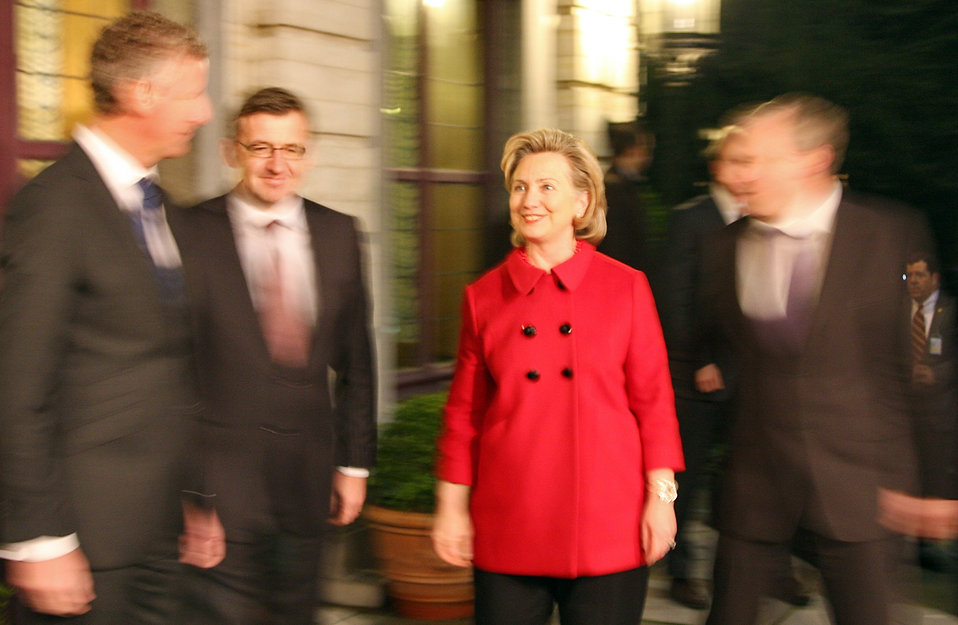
Secretary Clinton Meets With Belgian Officials

U.S. Secretary of State Hillary Rodham Clinton meets with Belgian officials at Val Duchesse in Brussels, Belgium December 4, 2009. [U.S. Embassy Brussels by Freddy Moris / Public Domain]